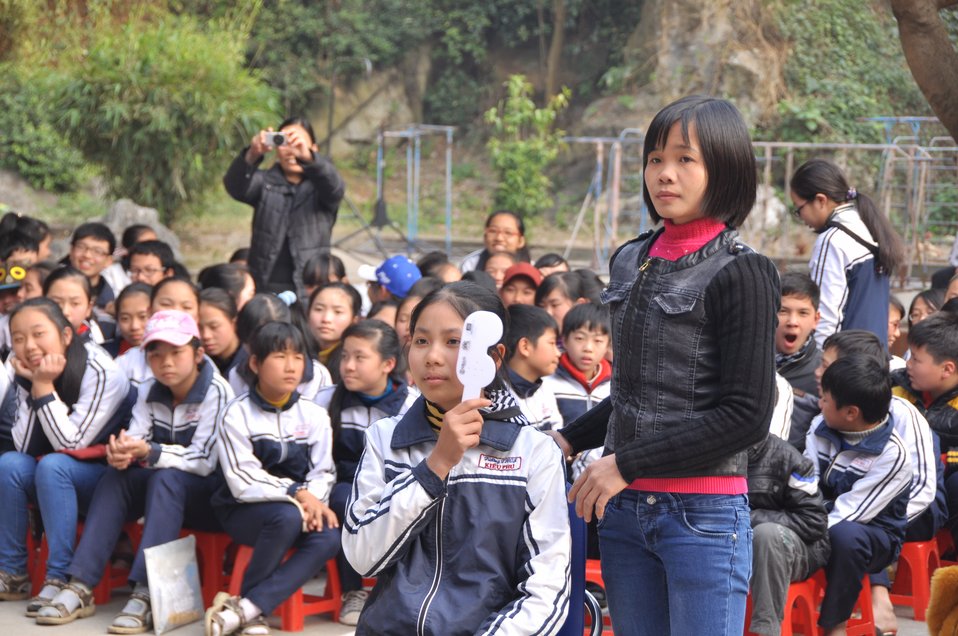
USAID supports distribution of eyeglasses to pupils and teachers in Quoc Oai, Hanoi.

Kieu Phu Junior Secondary School, Quoc Hoai, Hanoi, December 23, 2013.